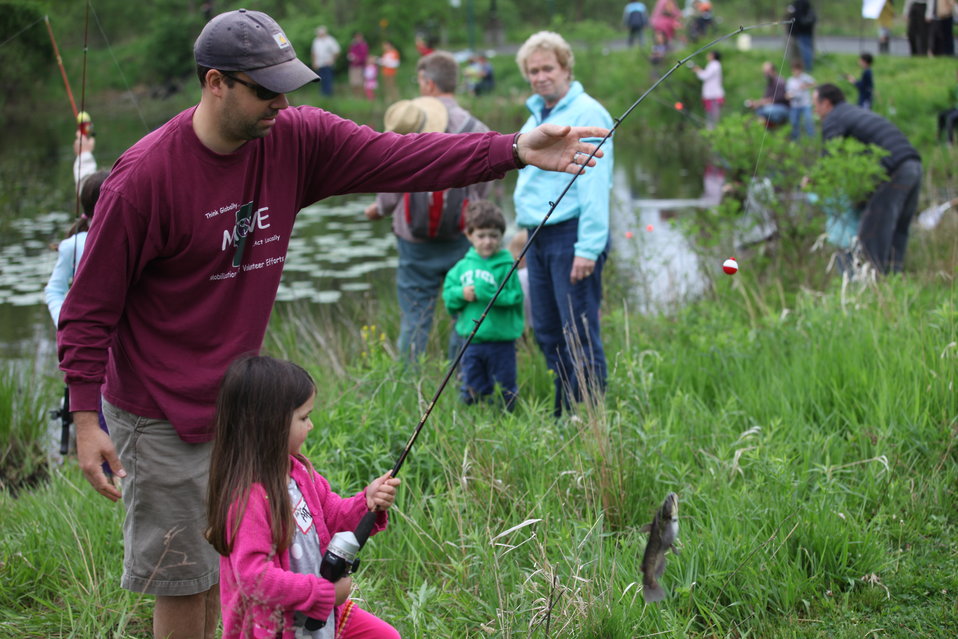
Fishing Derby